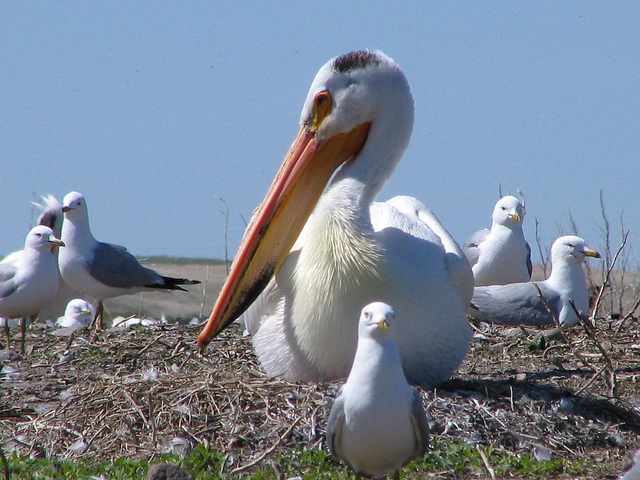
White Pelican

Chase Lake National Wildlife Refuge, SD
(Photo: USFWS)

In February, 2012, the Service released its plan to implement the Conserving the Future Vision, which was developed during a conference in July, 2011.